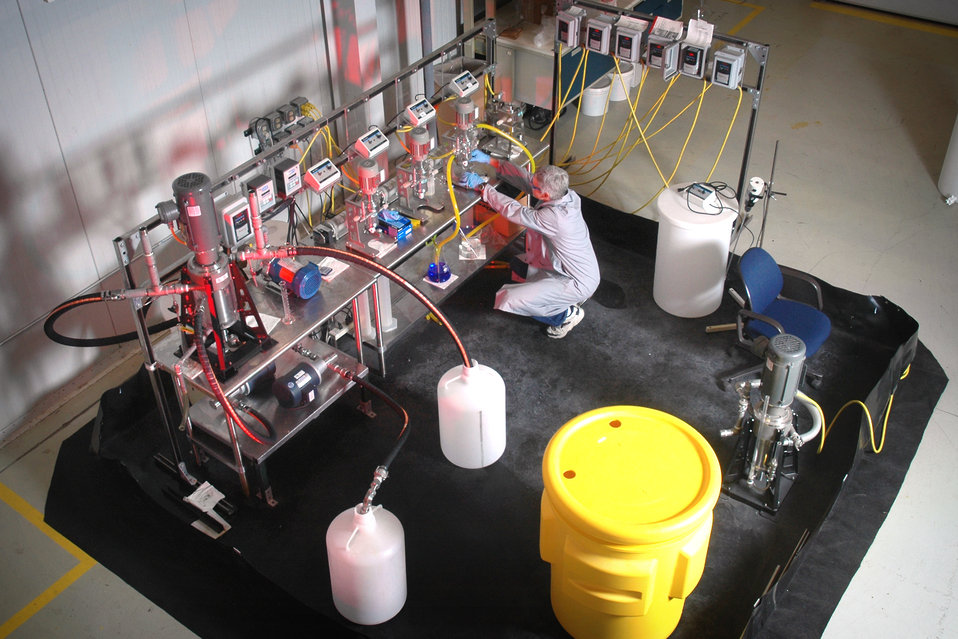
In 1990, at the Idaho National Laboratory, an initial patent was awarded for the annular centrifugal contractor that not only has immeasurably advanced aqueous nuclear fuel processing capabilities, but has also been amended to become an important environmental restoration tool and industrial process effluent separation tool.